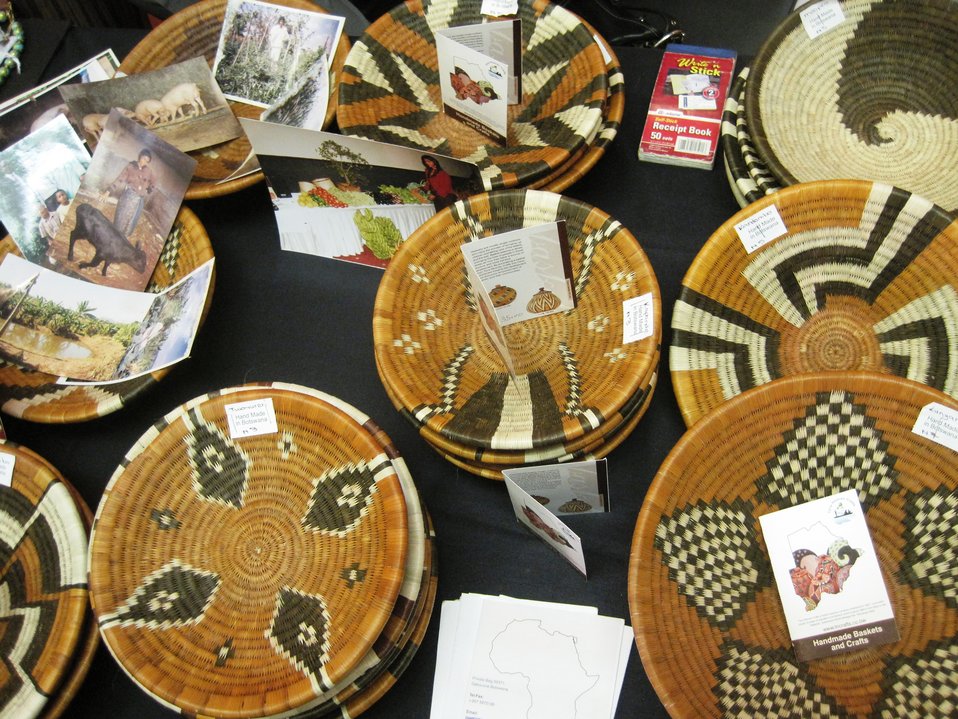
AGOA Forum participants display products in Kansas City, Missouri, on August 4, 2010.